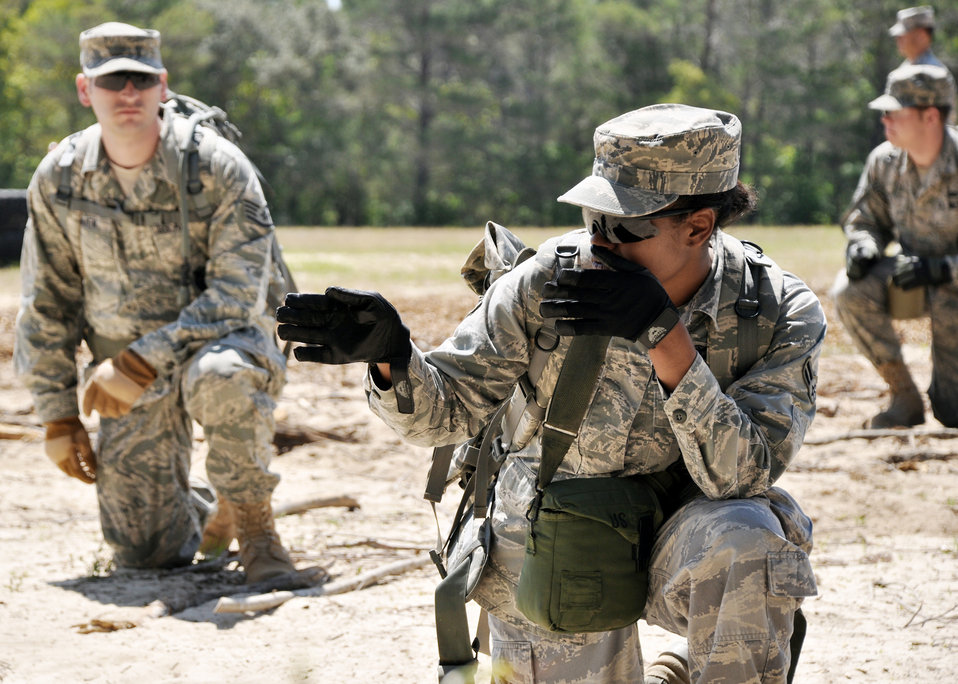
Brave Defender training

Airmen scout the perimeter while searching for improvised explosive devices during the counter-IED portion of Brave Defender training April 22, 2010, at Eglin Air Force Base. Airmen are from the 316th Security Forces Squadron at Joint Base Andrews Md.